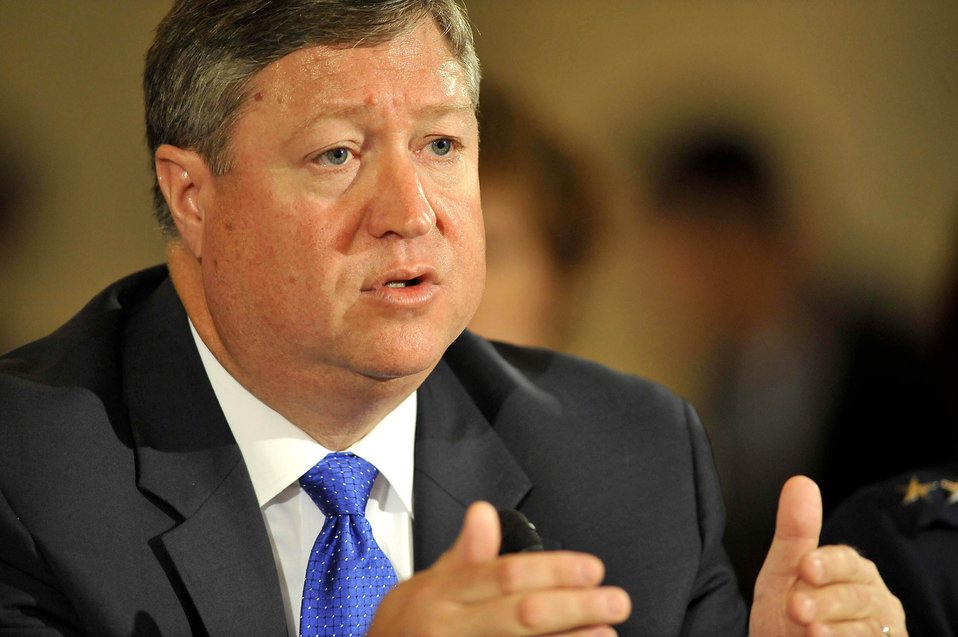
Senate confirmation hearing for Air Force leaders

Michael B. Donley testifies before the Senate Armed Services Committee July 22 during hearings to examine his nomination as well as those of Gen. Norton A. Schwartz and Gen. Duncan J. McNabb for three key posts. Mr. Donley is being reviewed for secretary of the Air Force, General Schwartz for chief of staff, and General McNabb as commander of the U.S. Transportation Command.